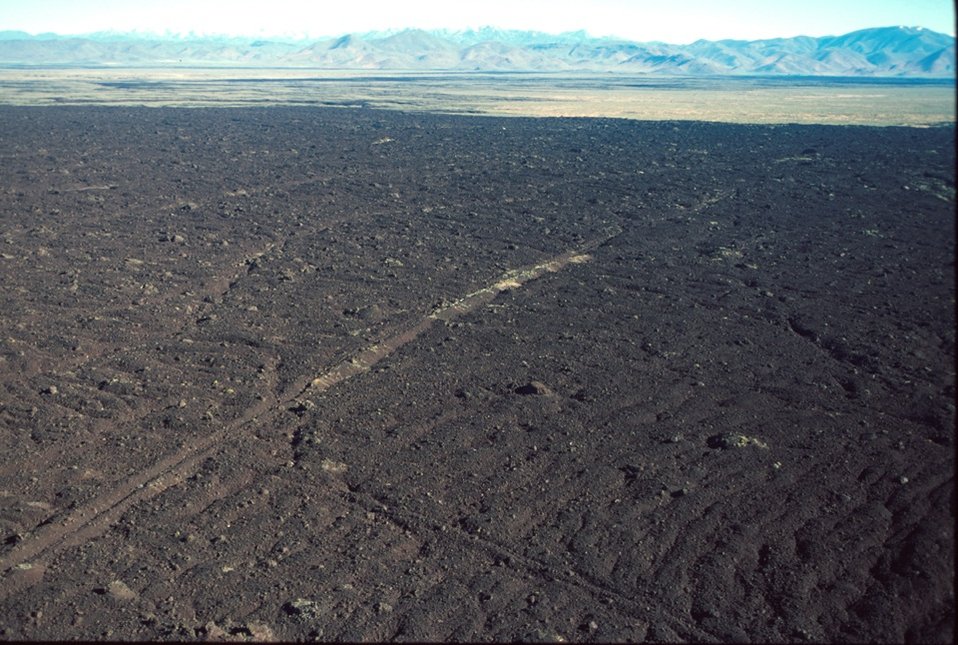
Craters of the Moon National Monument Shoshone Field Office USRD Upper Snake River District